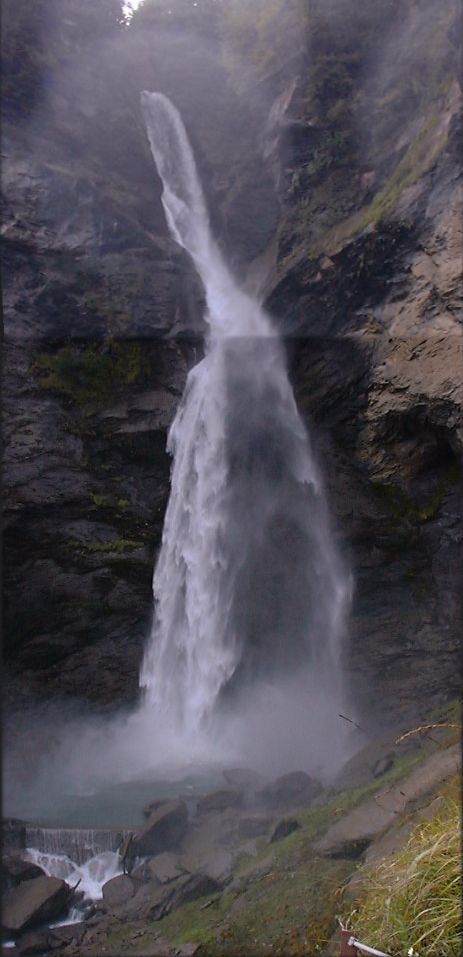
02924a reichenbach